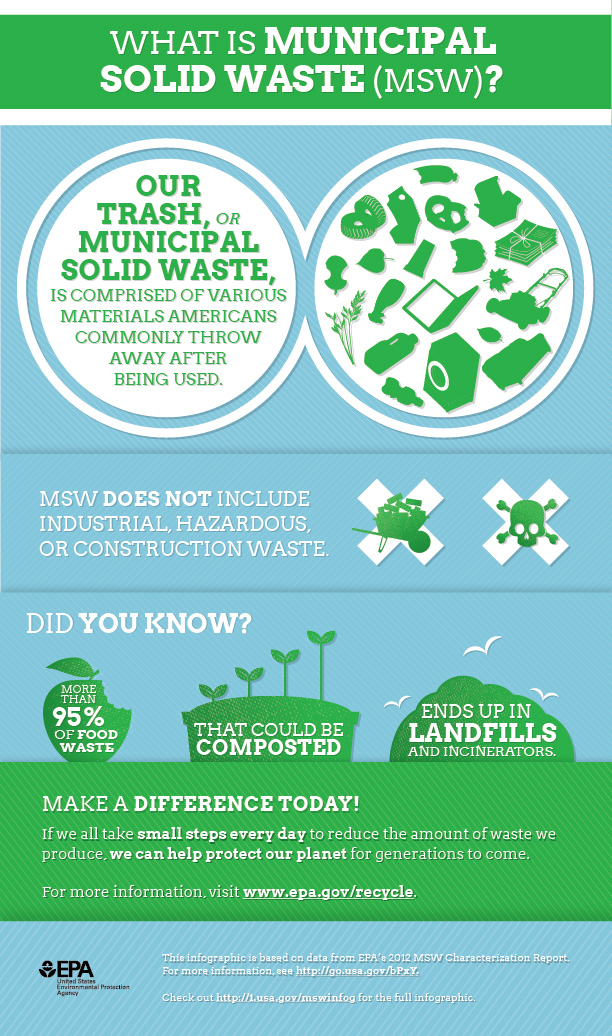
What is Municipal Solid Waste (MSW)?

Municipal Solid Waste (MSW) is the technical term, but most people just call it trash. It comes from our homes, schools, hospitals, and businesses.
- Full infographic: go.usa.gov/bPcA
- 2012 Municipal Solid Waste Characterization Fact Sheet: go.usa.gov/bPxY